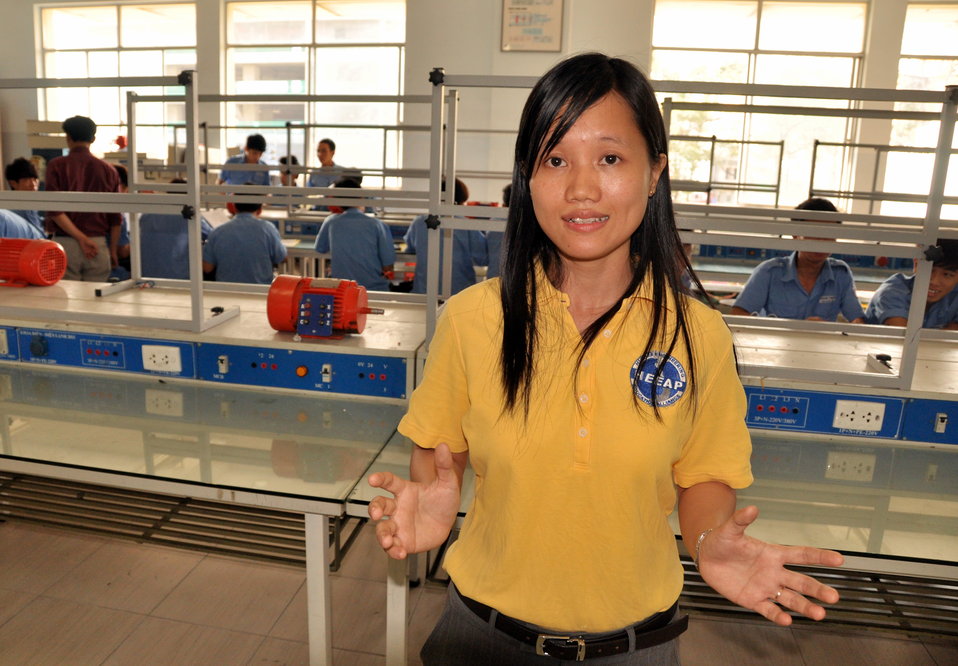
HEEAP Partner, Cao Thang Technical College

Ta Ngoc Y Thien, one of the faculty trained under the USAID-supported HEEAP program
Ho Chi Minh City, January 12, 2013